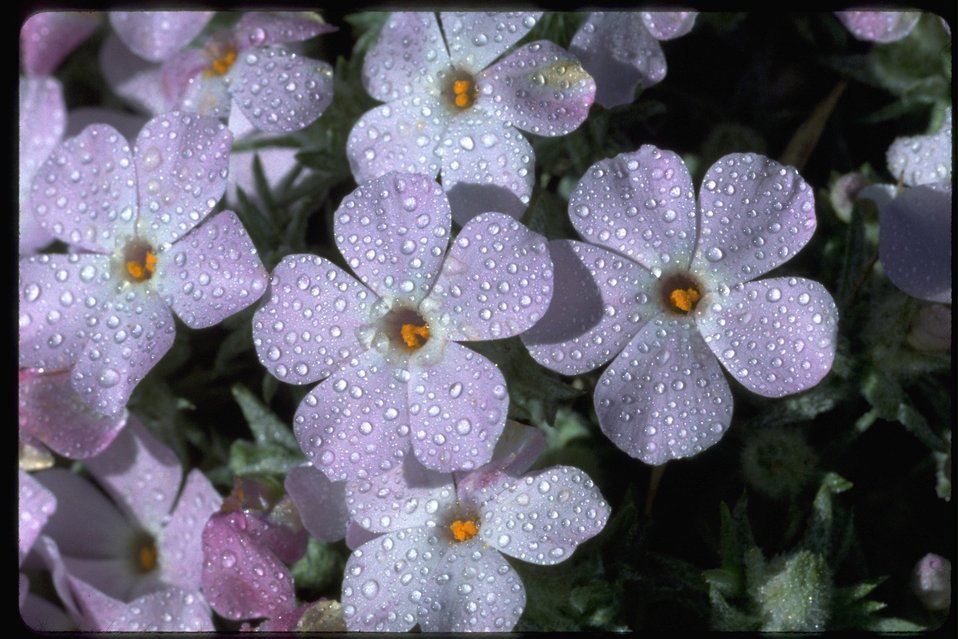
Close up shot of Phlox wildflowers with dew.